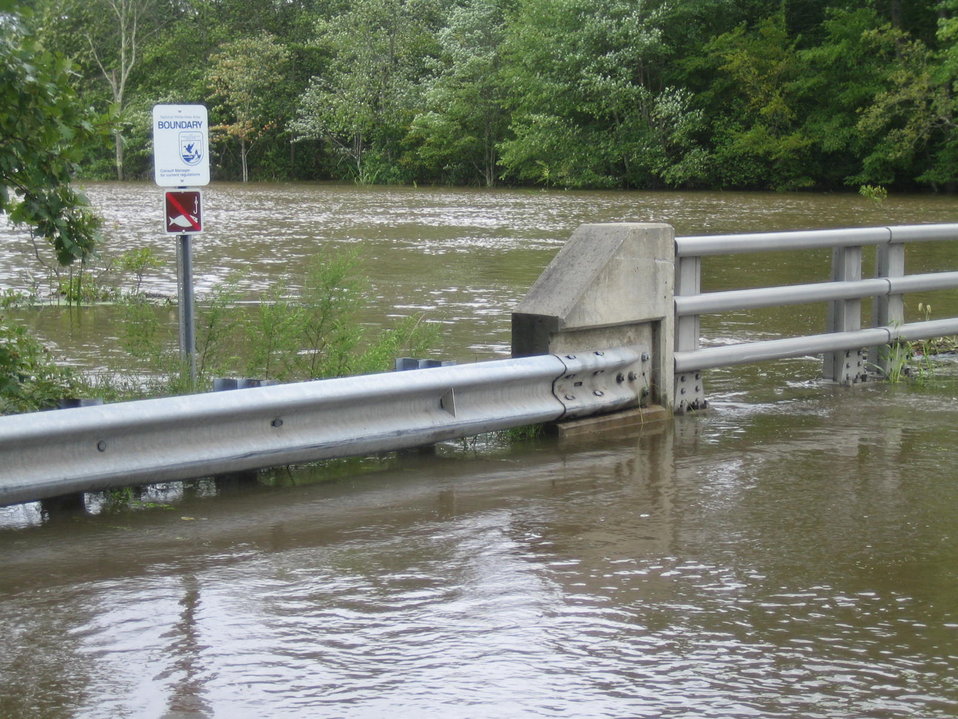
Flooded road at Great Swamp

Flooded road from Hurricane Irene at Great Swamp National Wildlife Refuge in New Jersey.